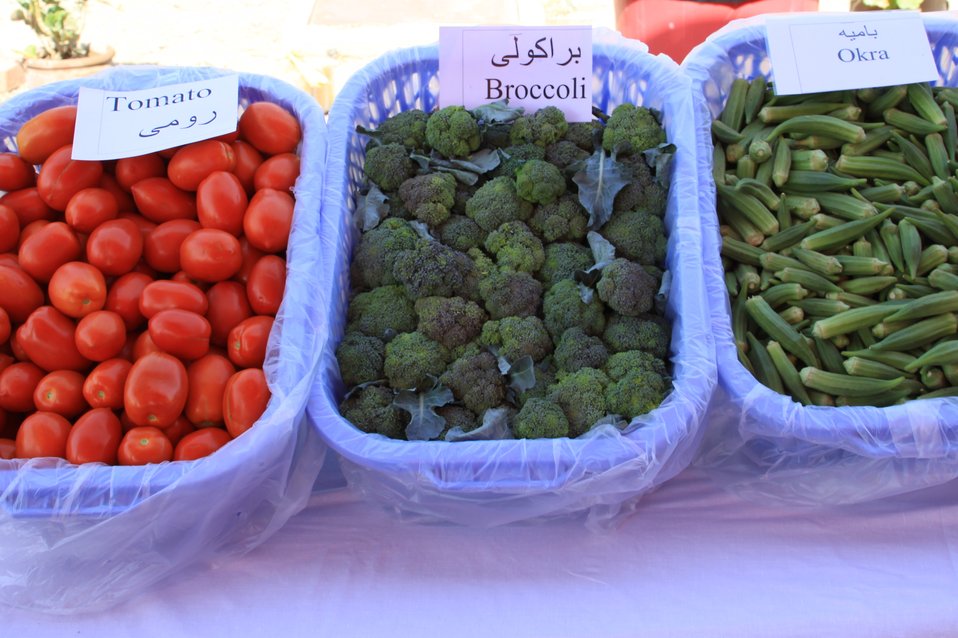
Badam Bagh Farm